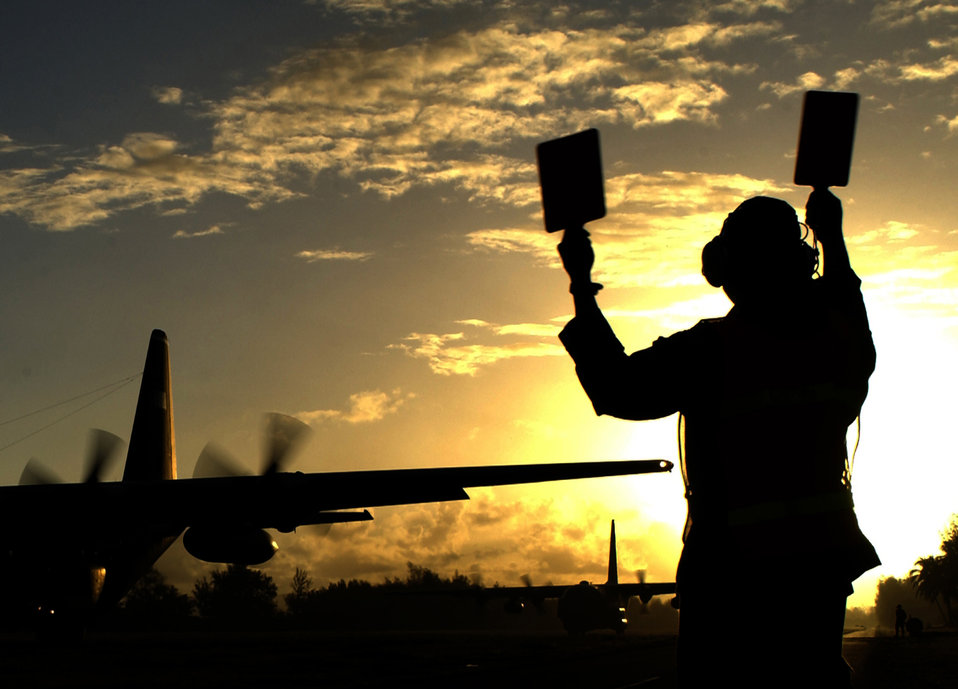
Dawn's morning light

DILLINGHAM AIRFIELD, Hawaii -- A C-130 Hercules prepares to take off in the first rays of morning light. The aircraft from Yokota Air Base, Japan, was packed with airmen from the 25th Air Support Operations Squadron and soldiers from the Army 2nd Brigade Combat Team participating in exercise Lightning Thrust Warrior here. The teams deployed for an assault on a simulated terrorist training operation.